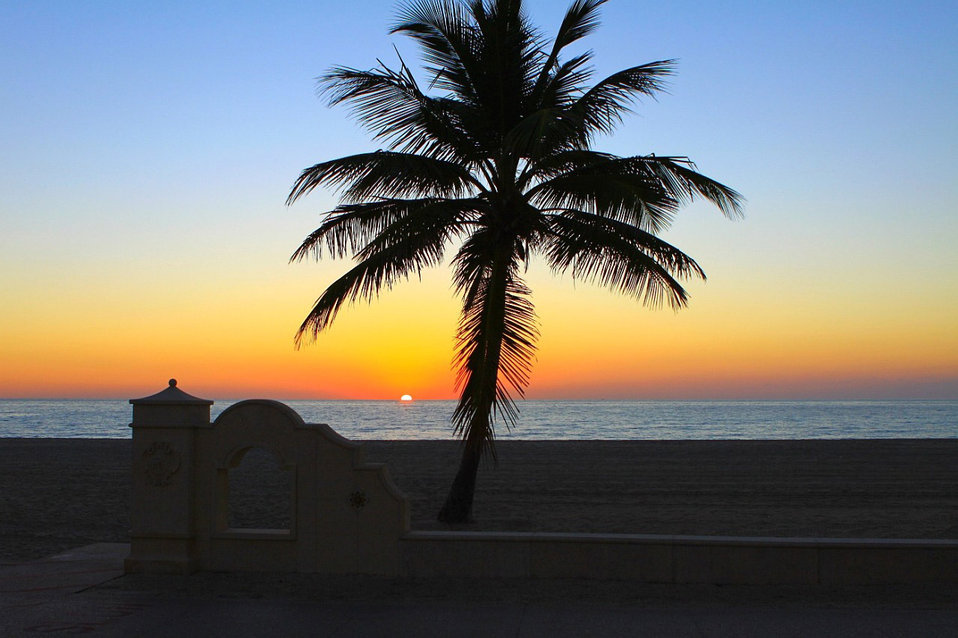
Colorful sunrise

Daybreak in hollywood fl.